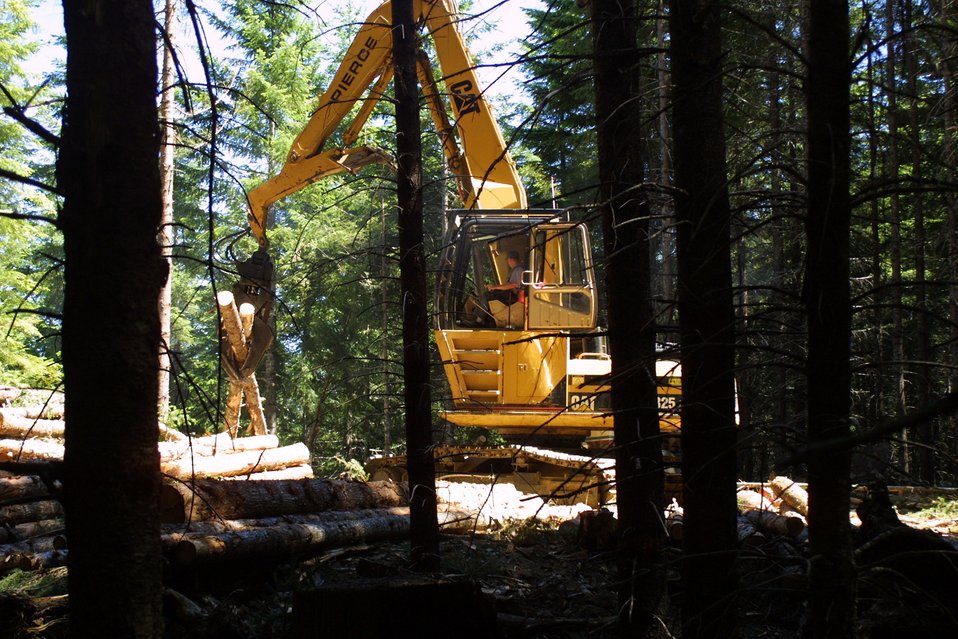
Camas East Timber Sale in Late Successional Reserve.